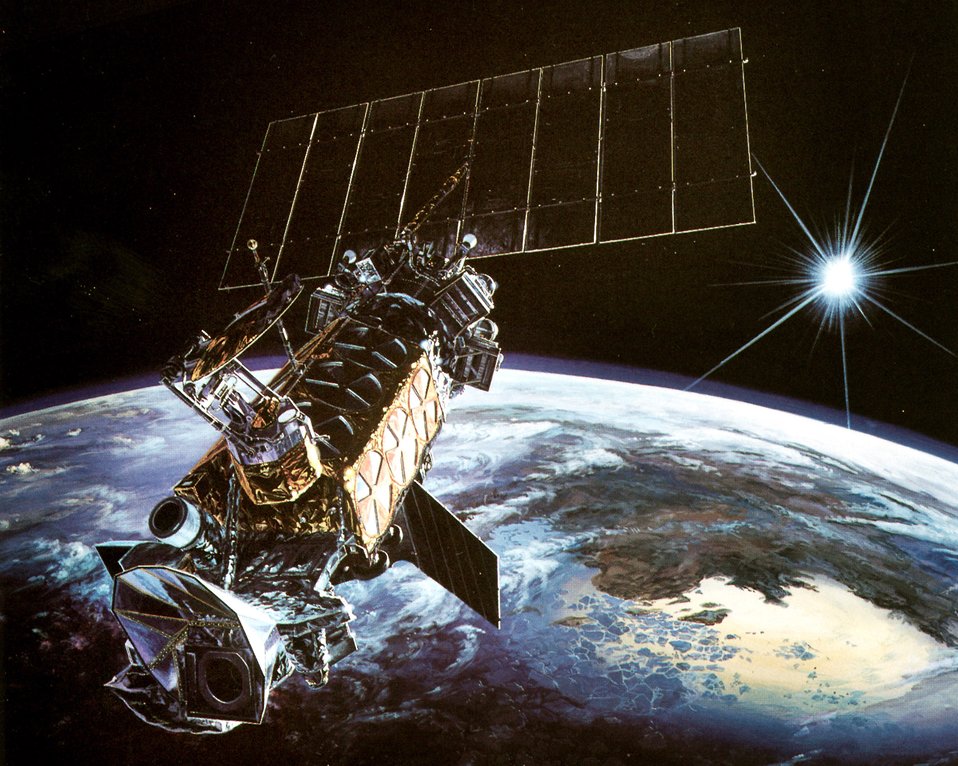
6th SOPS delivers critical weather data to warfighters

The Defense Satellite Meteorological Program is supported by the 6th Space Operations Squadron at Schriever Air Force Base, Colo. The 6th SOPS transforms weather from a force of nature into a force warfighters can use to their advantage.